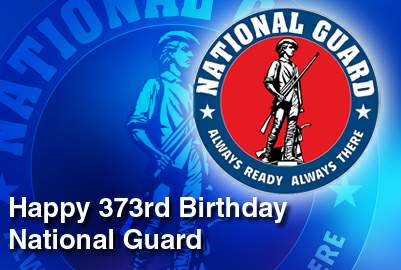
Joint Chiefs chairman sends birthday message to National Guard

Navy Adm. Mike Mullen, chairman of the Joint Chiefs of Staff, sent a birthday message to members of the National Guard.